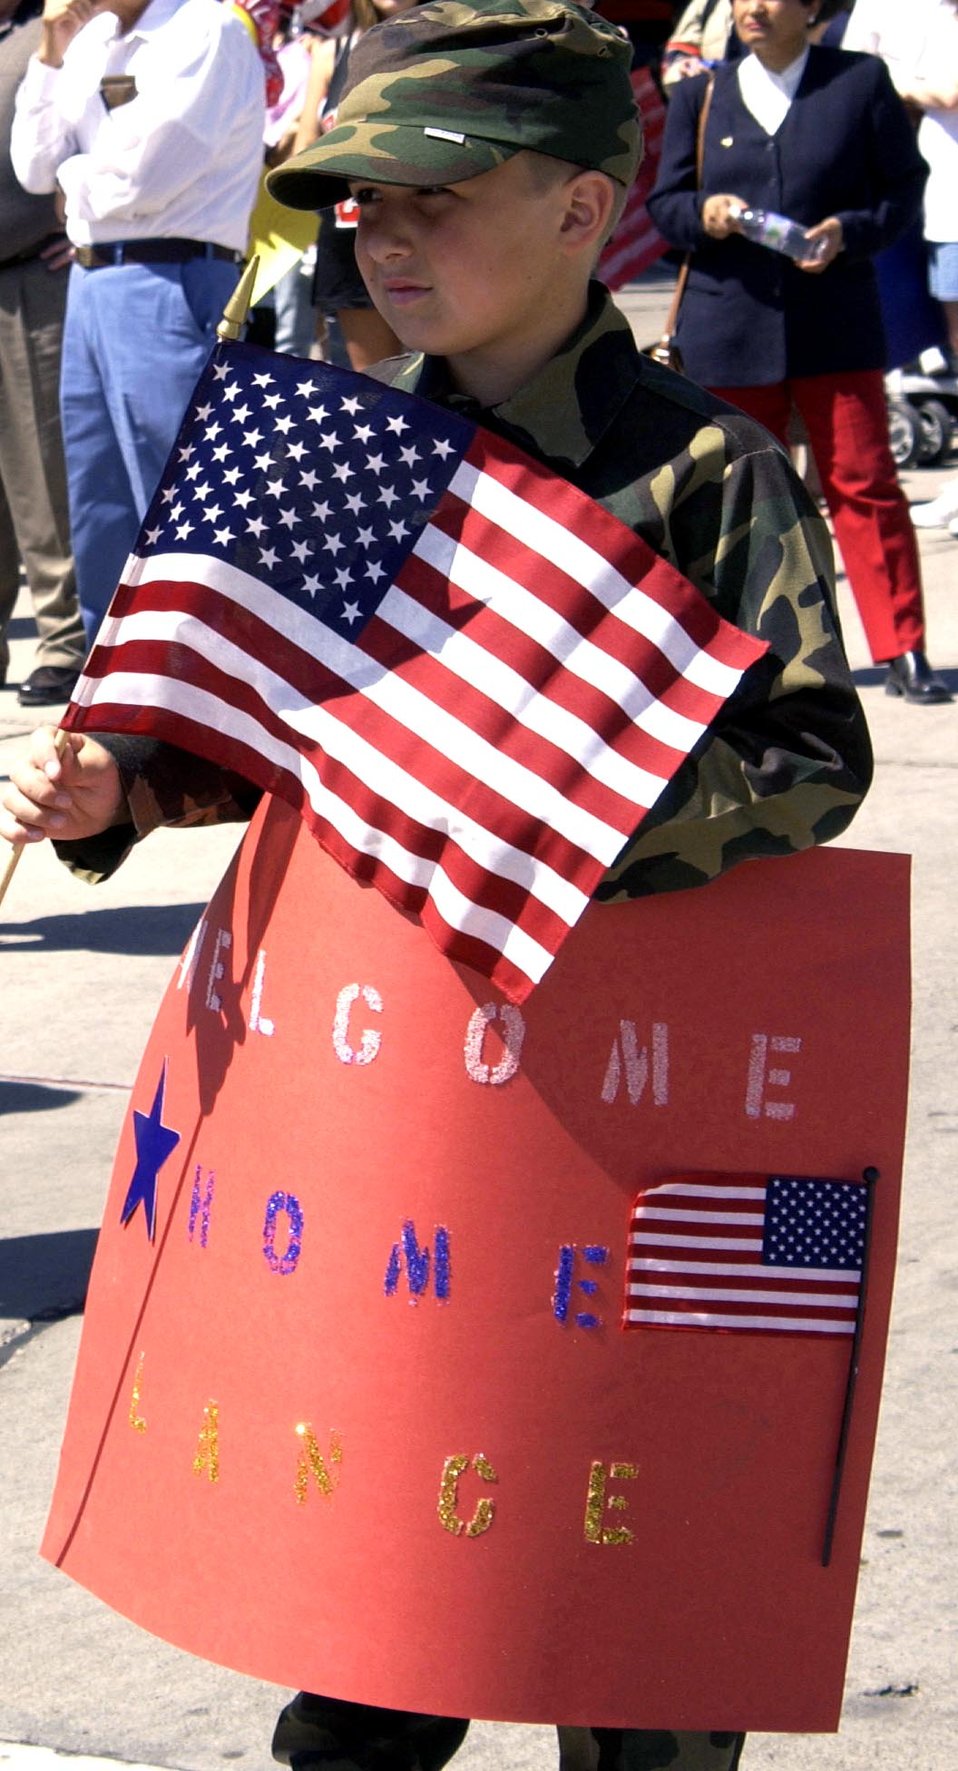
Deployment Return

NELLIS AIR FORCE BASE, Nev. -- Aaron Merrill anxiously waits to see his step father who is returning home from a 13-month deployment here March 25. Aaron's step father is a reservist with the U.S. Army's 257th Transportation Company in Las Vegas.